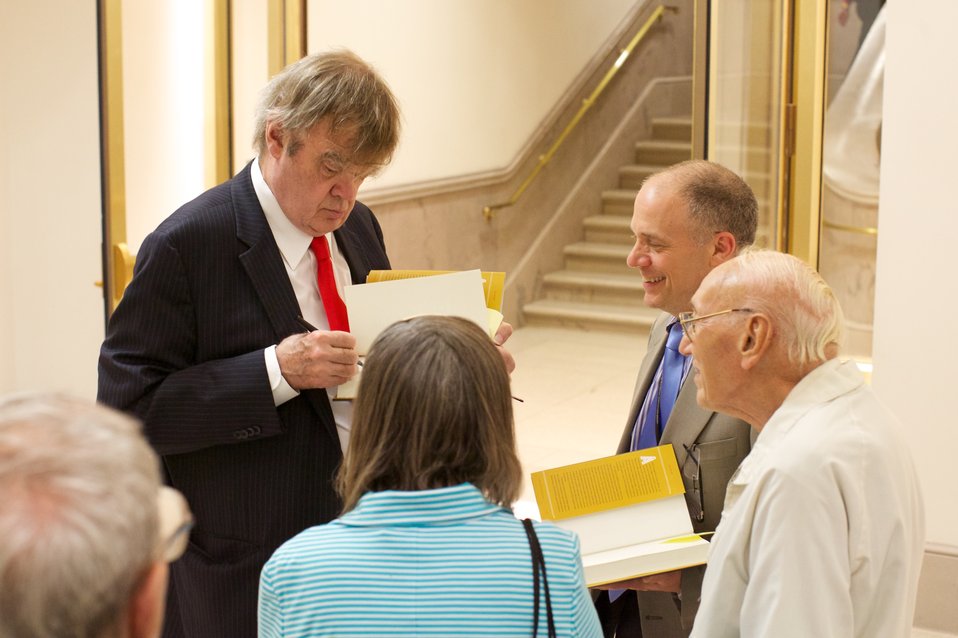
The Keillor Reader